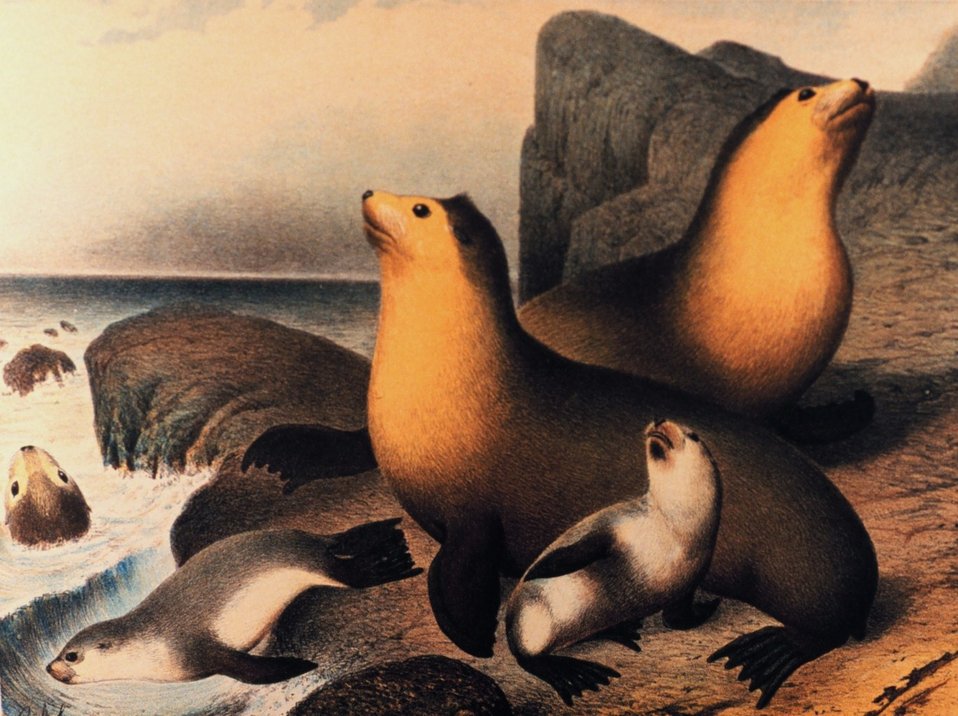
Southern Fur Seal -- Arctocephalus gazella Peters and Arctocephalus elegans Peters. As seen at New Amsterdam Island. In: 'Die Forschungsreise S. M. S. 'Gazelle' in den Jahren 1874 bis 1876.' P. 322. Plate 3. Library Call Number C/L G373 H.